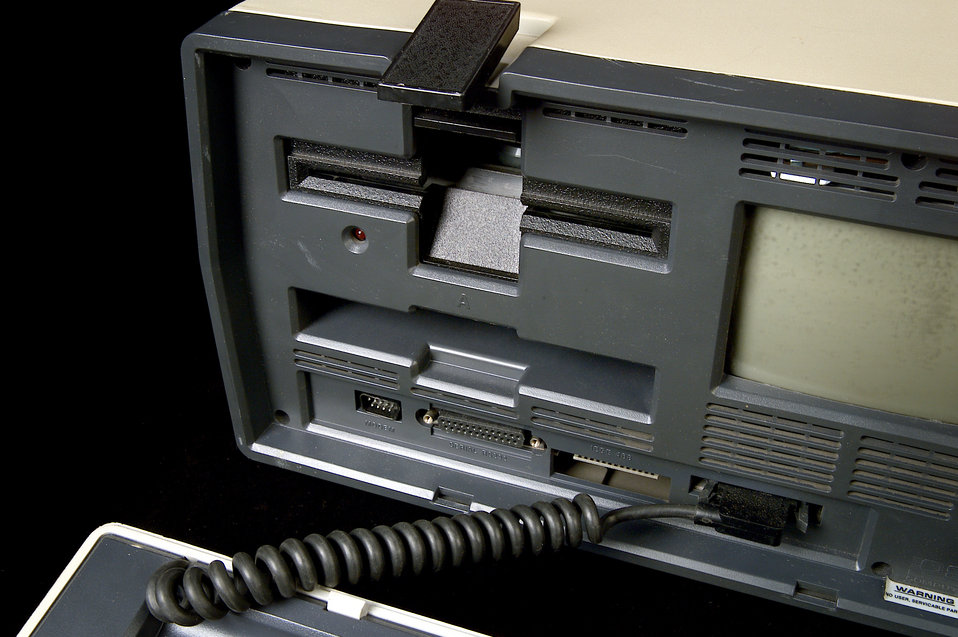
This is the Osborne 1, a 'laptop' computer first used at the CDC in 1981 and was considered the 'first true portable computer'